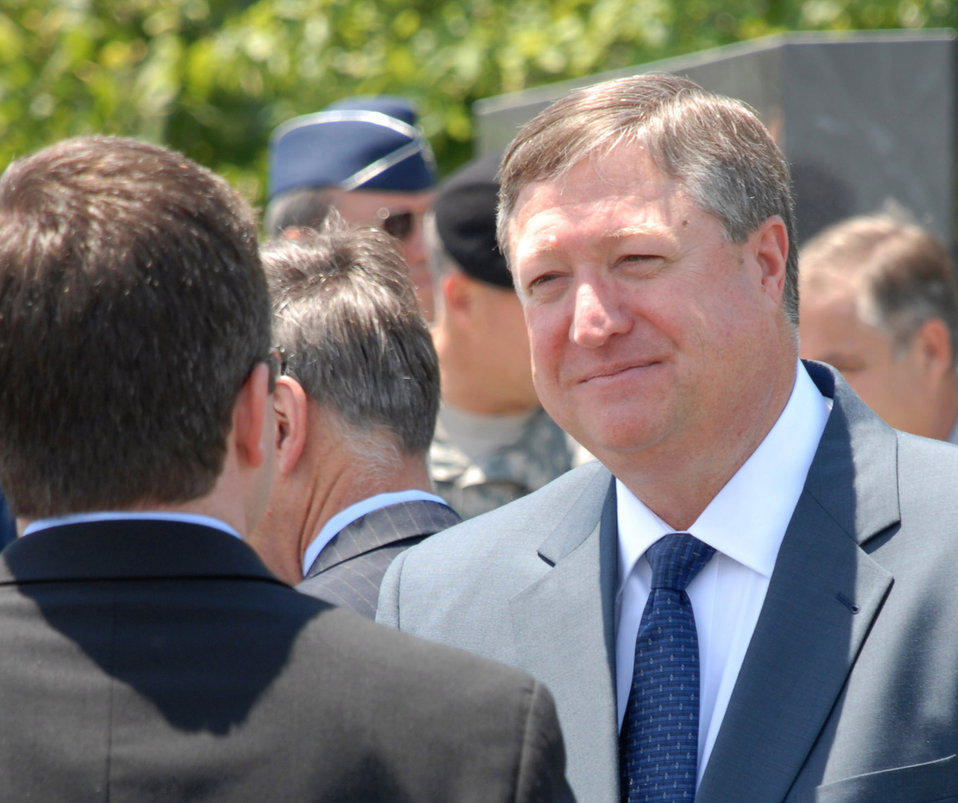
Donley in as acting Air Force secretary

Michael Donley chats June 20 during a ceremony at the Air Force Memorial honoring former Secretary of the Air Force Michael W. Wynne.